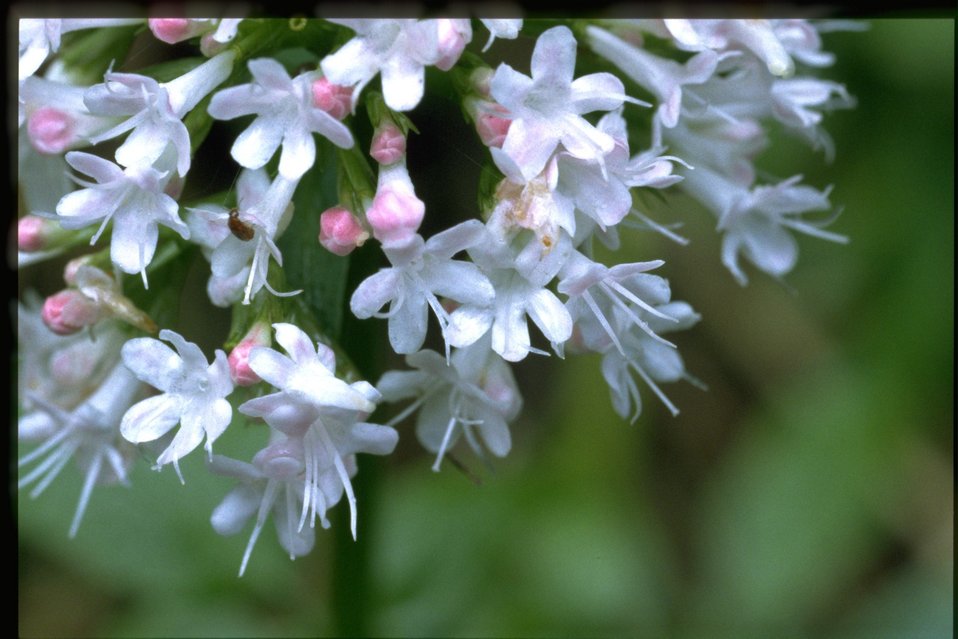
Closeup shot of Valeriana sitchensis.